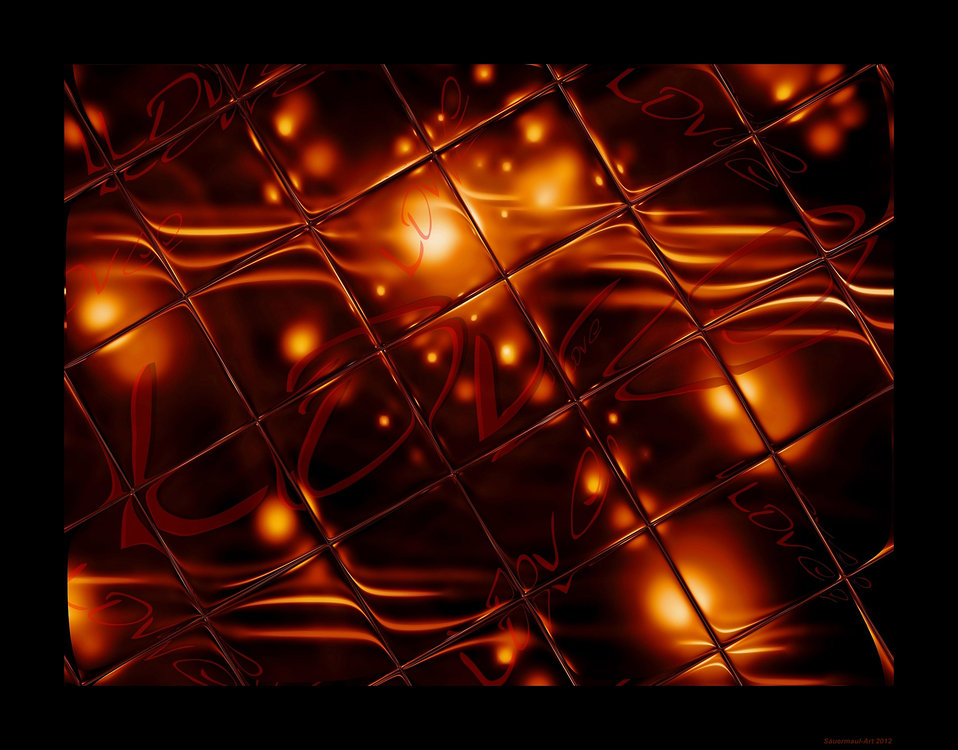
Picture of love for pdp.net

Thank you for publicdomainpicture.net team for your good work ♥.